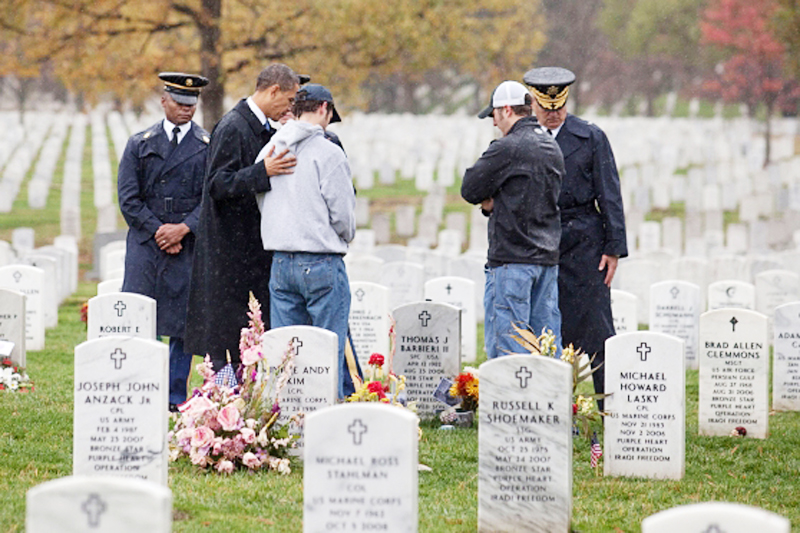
Obama's pledge: America will fulfill obligations to veterans

President Barack Obama, second from left, and Army Brig. Gen. Karl Horst, right, stop Nov. 11, 2009, to talk with visitors among the graves of soldiers from the Iraq and Afghan conflicts in Section 60 of Arlington National Cemetery on Veterans Day.